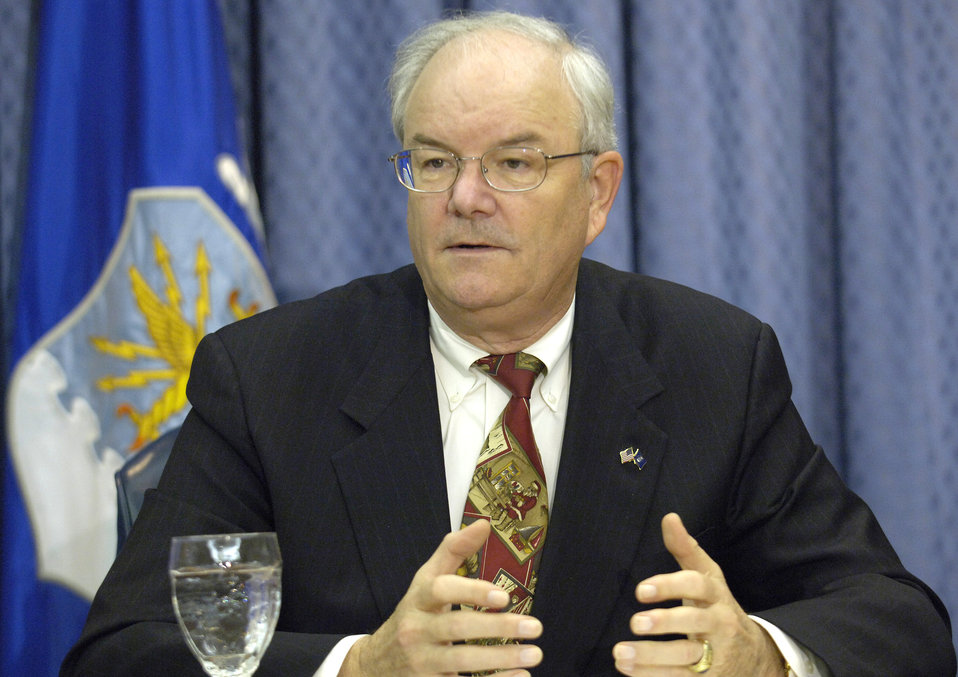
Media round table

WASHINGTON (AFPN) -- Secretary of the Air Force Michael W. Wynne answers a reporter's questions during a media round table discussion at the Pentagon Dec. 13.